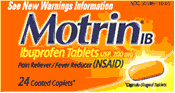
RECALLED - Motrin IB Coated Tablets and Motrin IB Coated Caplets

December 21, 2011 - McNeil Recall of Motrin IB Tablets and Caplets.